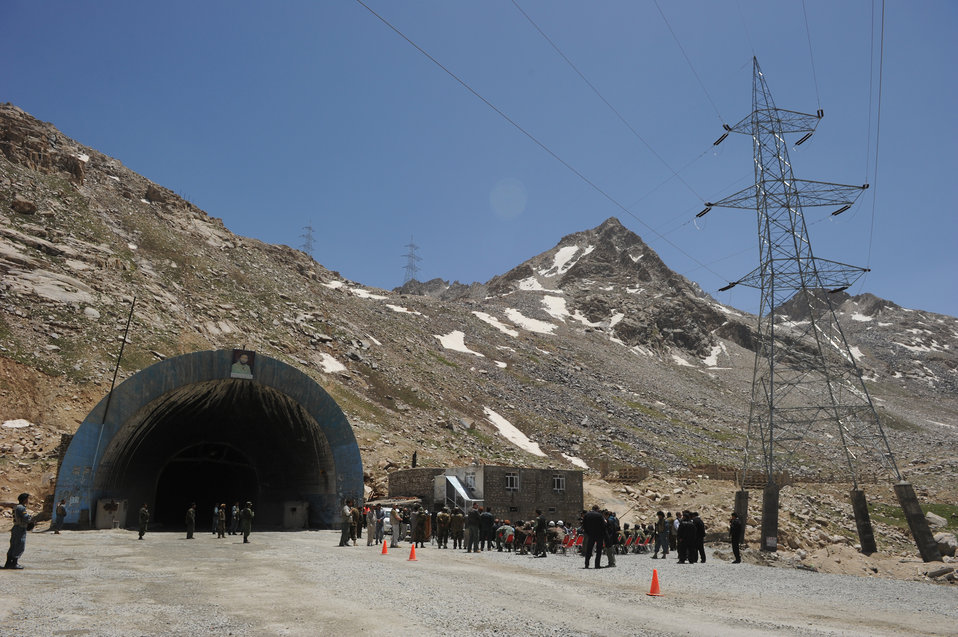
A ceremony to mark the beginning of renovations at the Salang Tunnel on the border of Parwan and Baghlan Provinces, Afghanistan, on Wednesday, June 15, 2011. (S.K.Vemmer/Department of State)